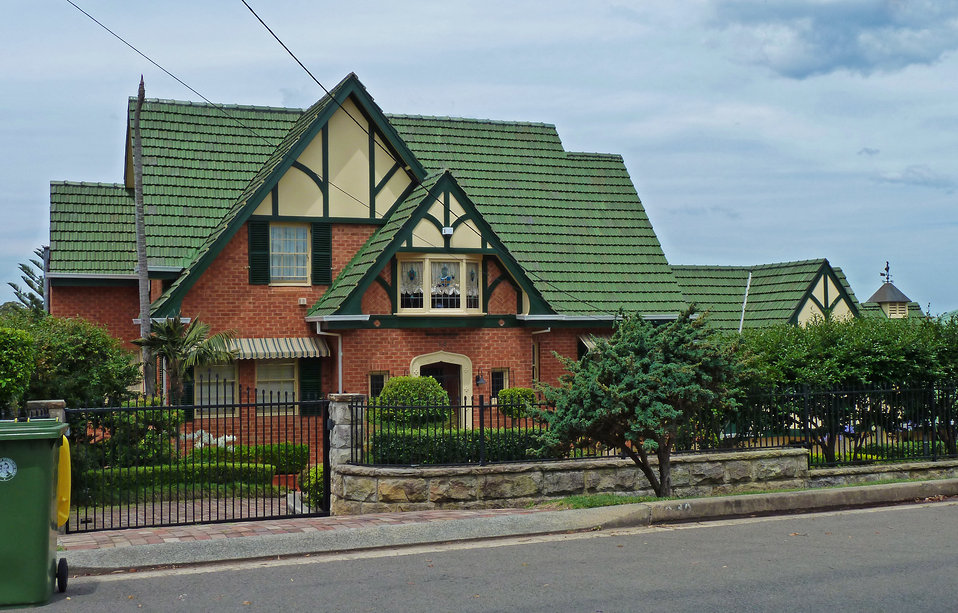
10–12 Kangaroo Point Road, Kangaroo Point, New South Wales, Australia.